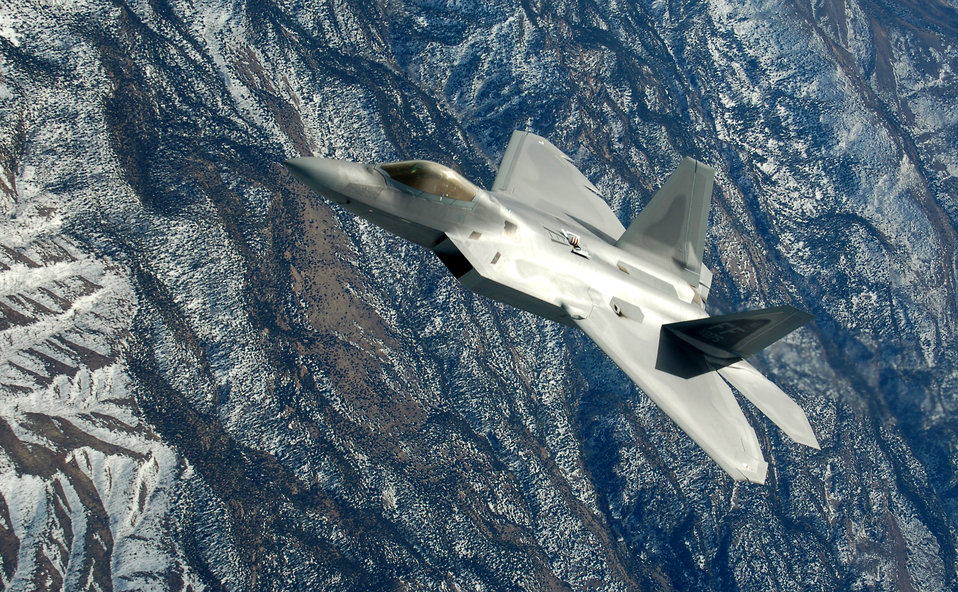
Raptors invade Nevada

An F-22 Raptor participates in a Red Flag exercise Feb. 7 over Nevada. Red Flag is an exercise designed to hone the warfighting skills of Air Force pilots.